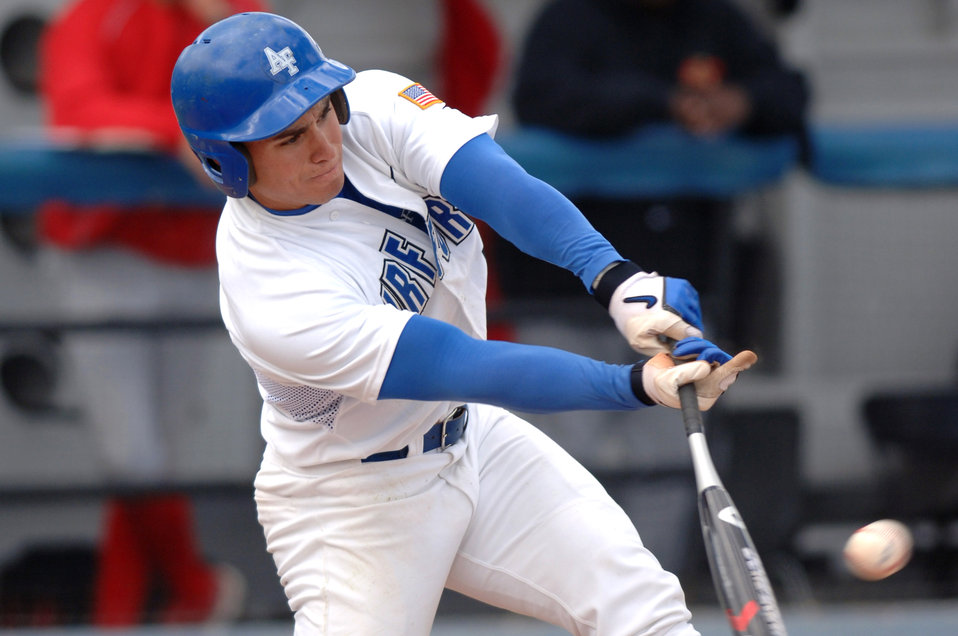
San Diego defeats Falcons

Junior outfielder Cadet Chay Derbigny connnects on a pitch during the 12-9 loss against San Diego State March 22. The Falcons hosted the Aztecs for a 3-game series.